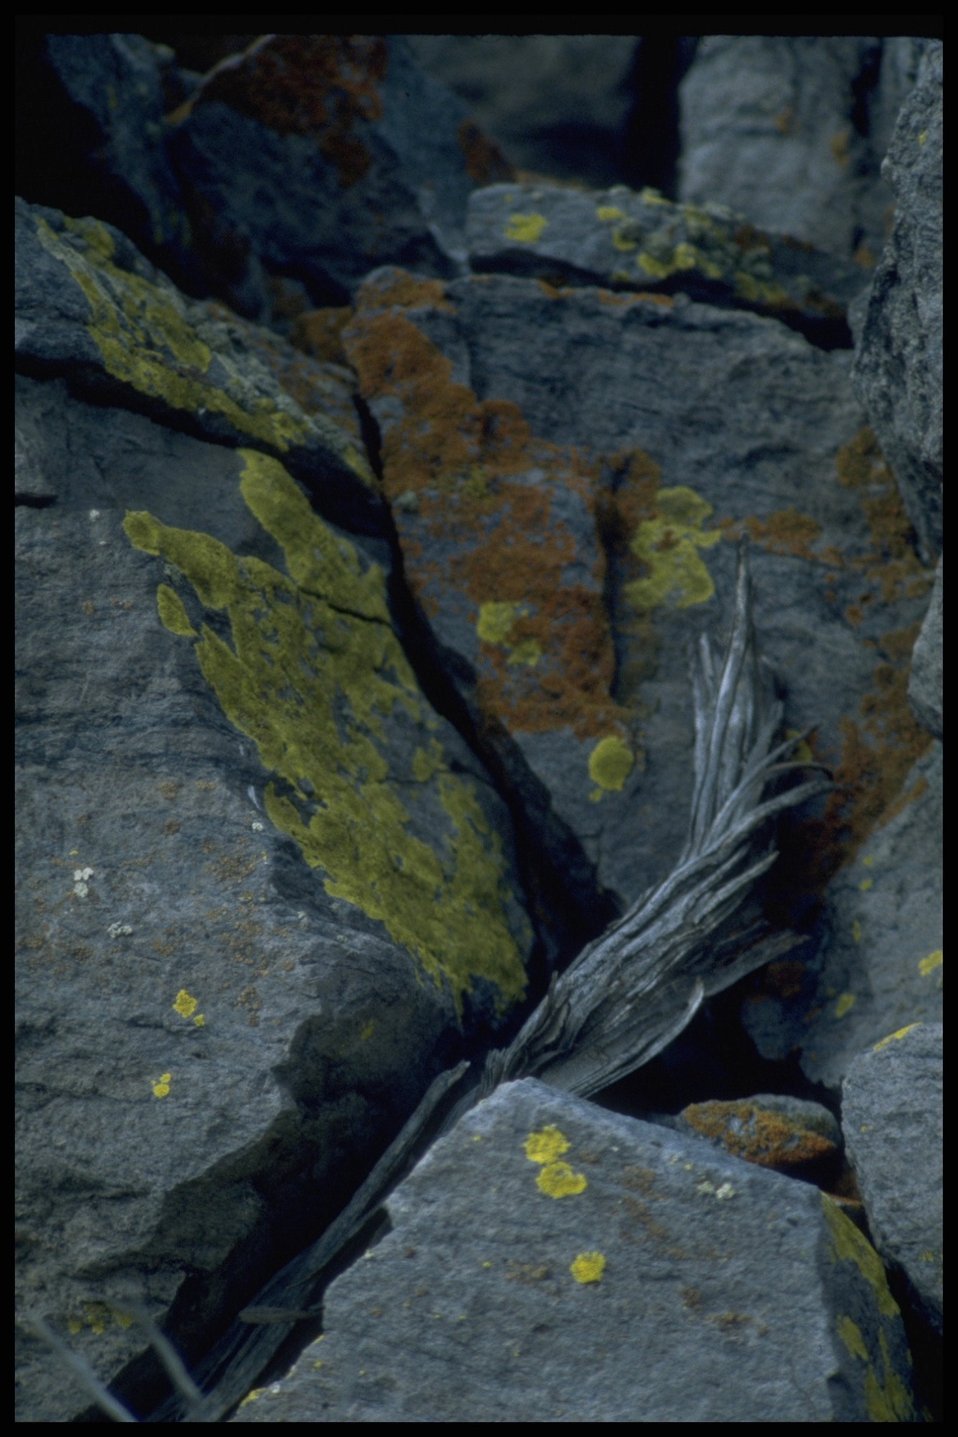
Lakeview District rocks.